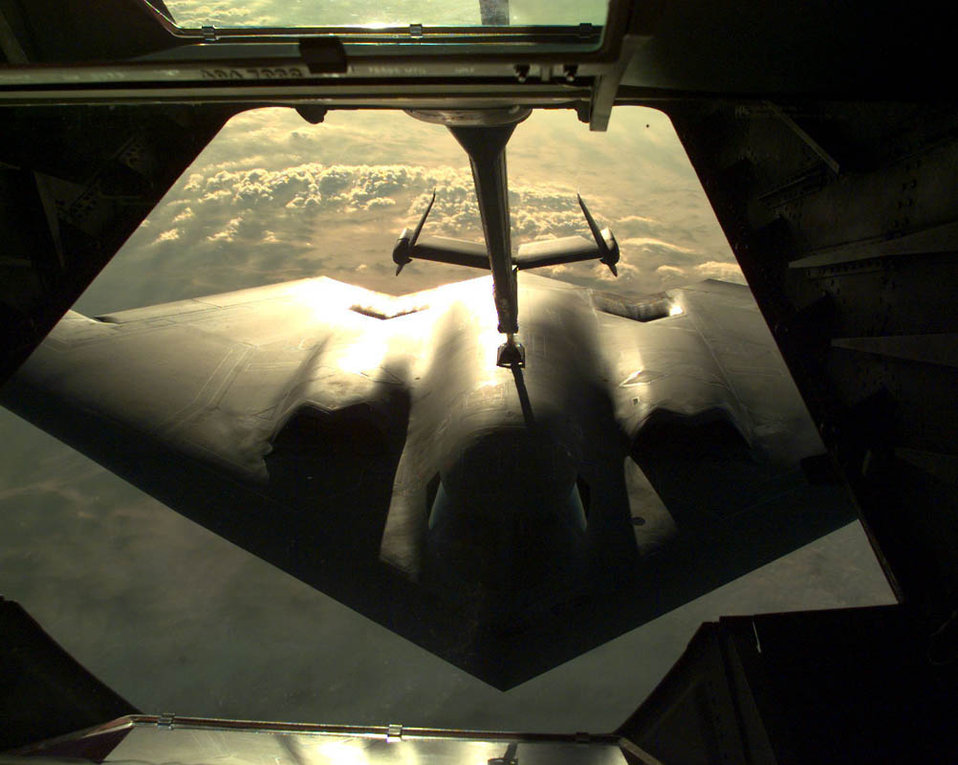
Fill up the tank

FILE PHOTO -- The United States Air Force's newest airplane, The B-2 Spirit bomber, assigned to the 509th Bomb Wing, Whiteman AFB, Mo. is refueled by a KC-10 Extender . The B-2 is a stealth bomber capable of delivering both conventional and nuclear weapons on target day or night in any weather conditions.